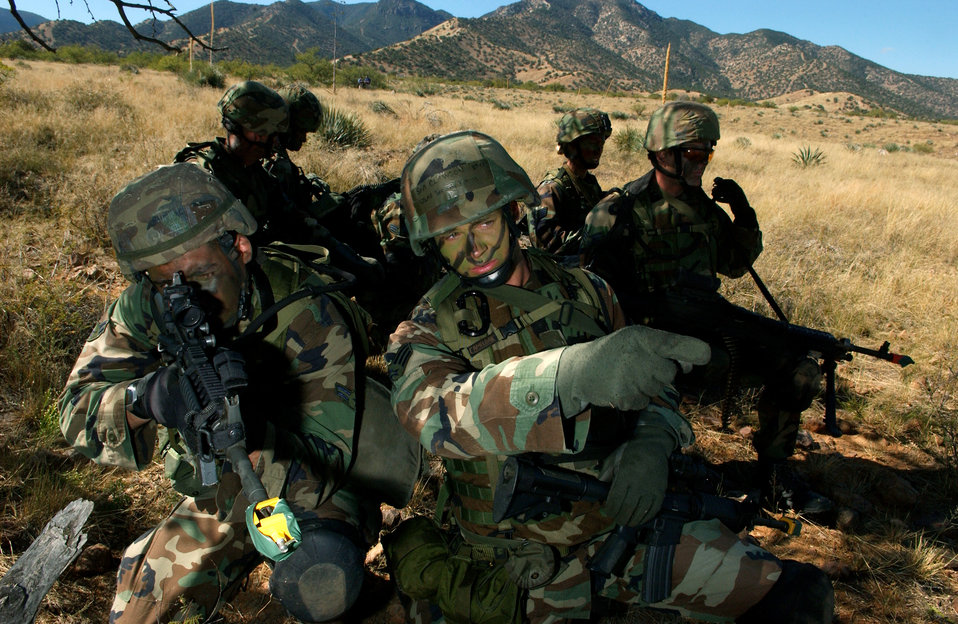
Defender Challenge 2004

FORT HUACHUCA, Ariz. -- Senior Airman Chris Clawson points out direction of a truck seen on a ridgeline during a tactics training reconnaissance mission Oct. 13. Members of the U.S. Air Forces in Europe Defender Challenge team are spending three weeks here in preparation for the 2004 Defender Challenge competition. Defender Challenge held at Lackland Air Force Base, Texas, is a security forces competition pitting competitors from major commands against one another. Airman Clawson is assigned to the 39th Security Forces Squadron, Incirlik Air Base, Turkey.